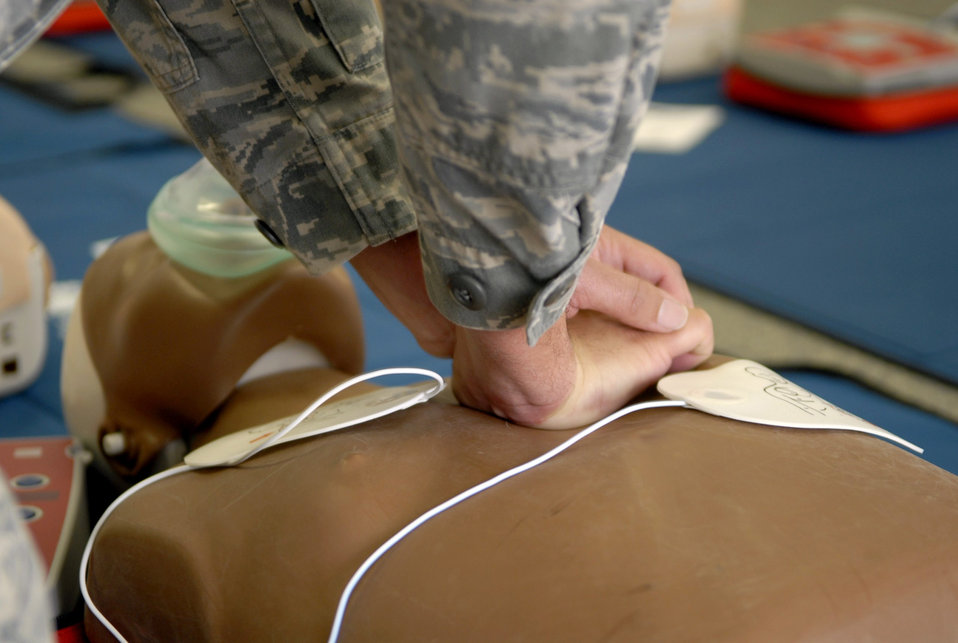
New CPR training wants you to switch your ABCs

A Heartsaver student practices the new American Heart Association CPR method of circulation-airway-breathing April 15, 2011, at Kadena Air Base, Japan.